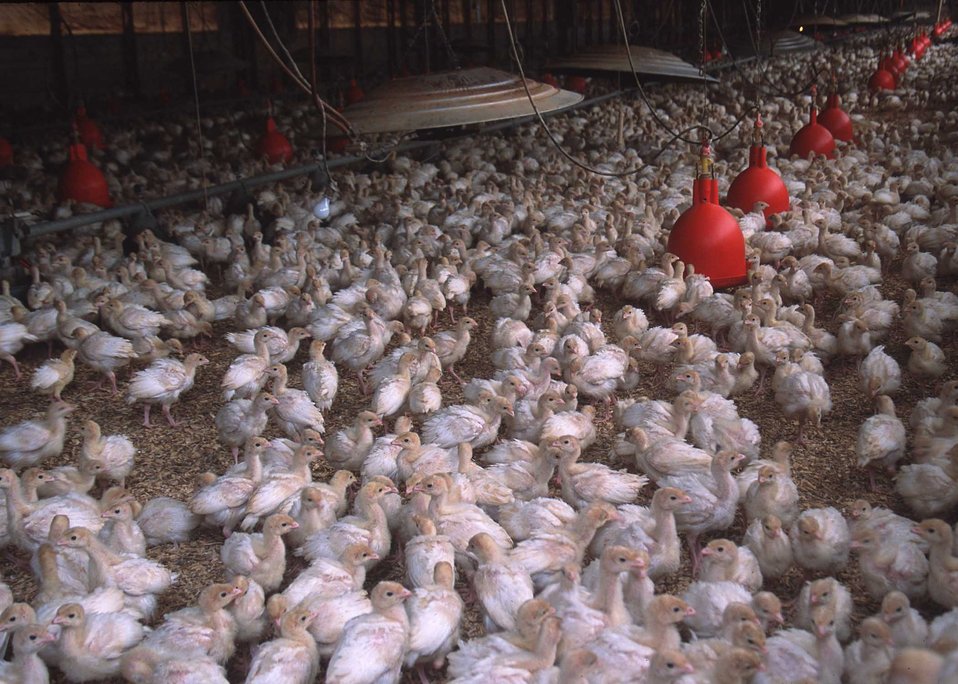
A total of 10,000 turkeys are raised in each building in Benton, Arkansas. Manure and wood chips used for bedding are then composted and used for fertilizer on adjacent pastures.